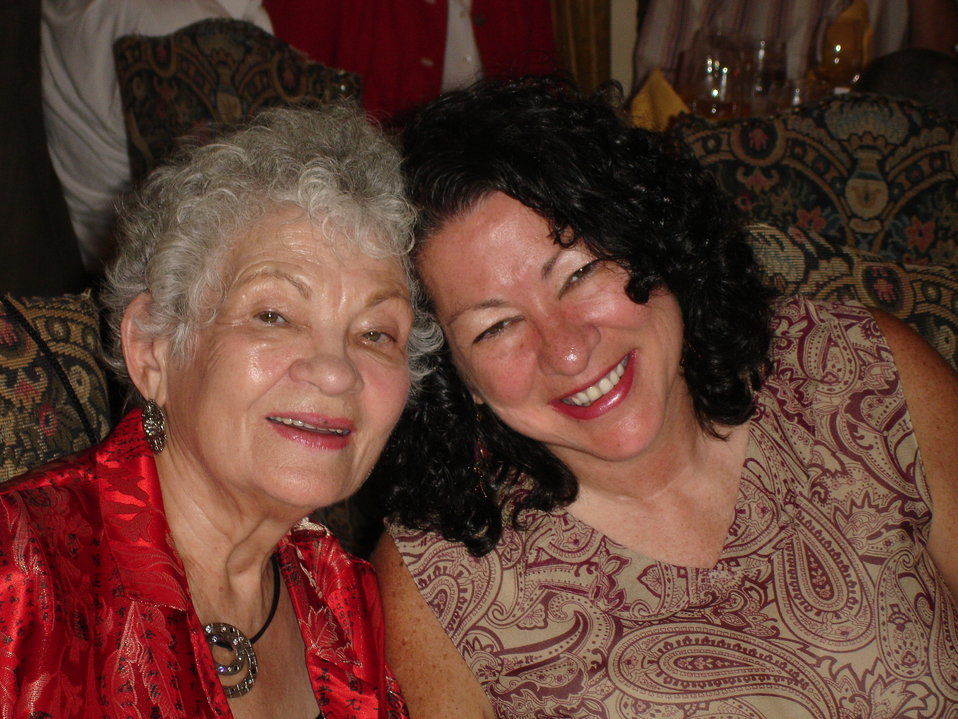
Judge Sonia Sotomayor with her mother, Celina Sotomayor.